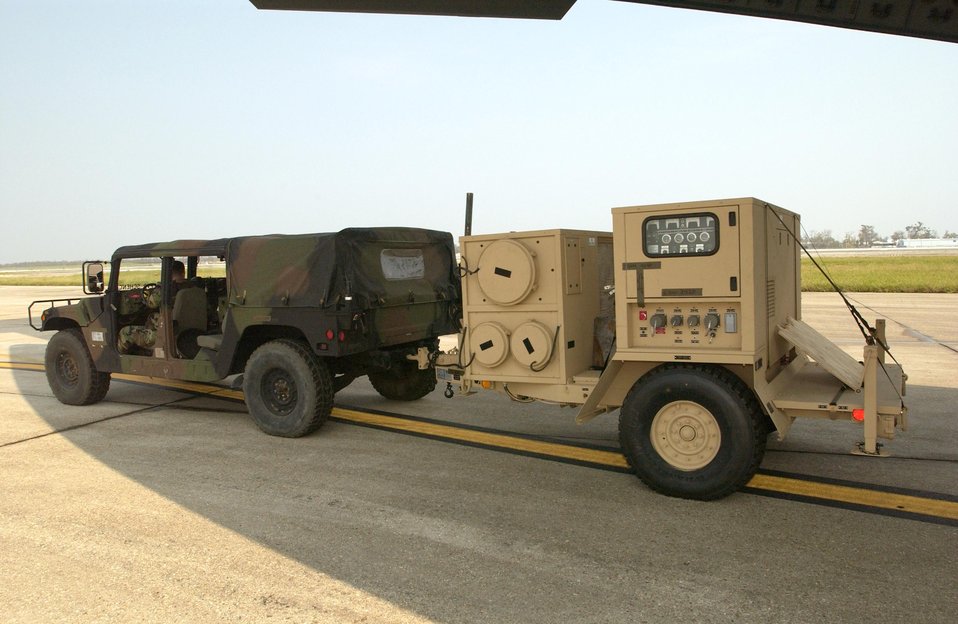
Hurricane Relief Efforts

LOUIS ARMSTRONG NEW ORLEANS INTERNATIONAL AIRPORT, La. -- Equipment for the U.S. Army's 82nd Airborne Division arrives Sept. 5 to support hurricane relief efforts here. Airmen with the 818th Contingency Response Group from McGuire Air Force Base, N.J., helped process the equipment and unload it from the aircraft.